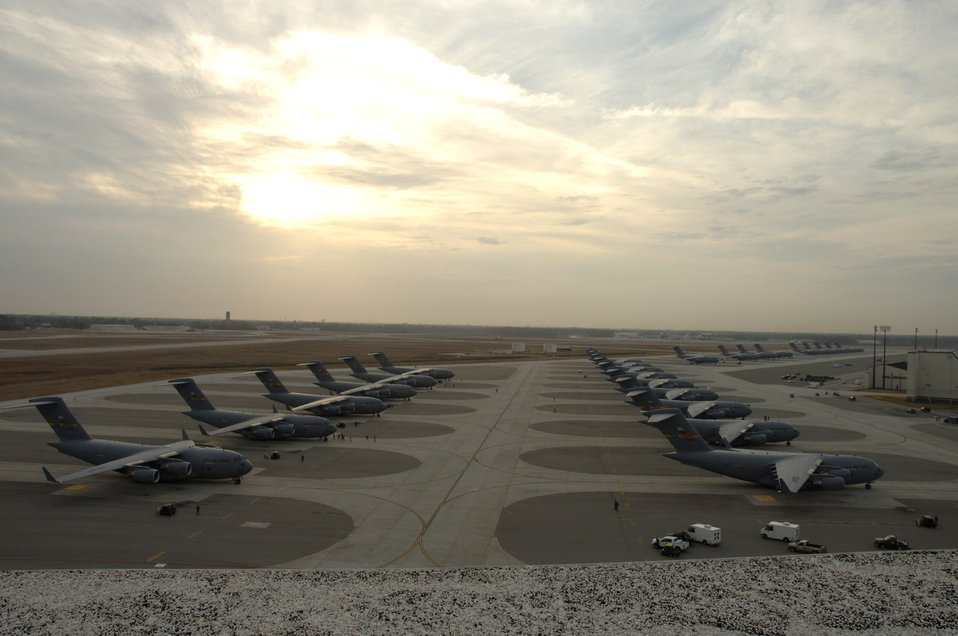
Globemasters galore

A line of C-17 Globemaster III's are parked on the runway Dec. 21 at Charleston Air Force Base, S.C. The C-17 is capable of rapid, strategic delivery of troops and all types of cargo. The design of the aircraft allows it to operate on small, austere airfields. It can take off and land on runways as short as 3,500 feet and 90 feet wide.